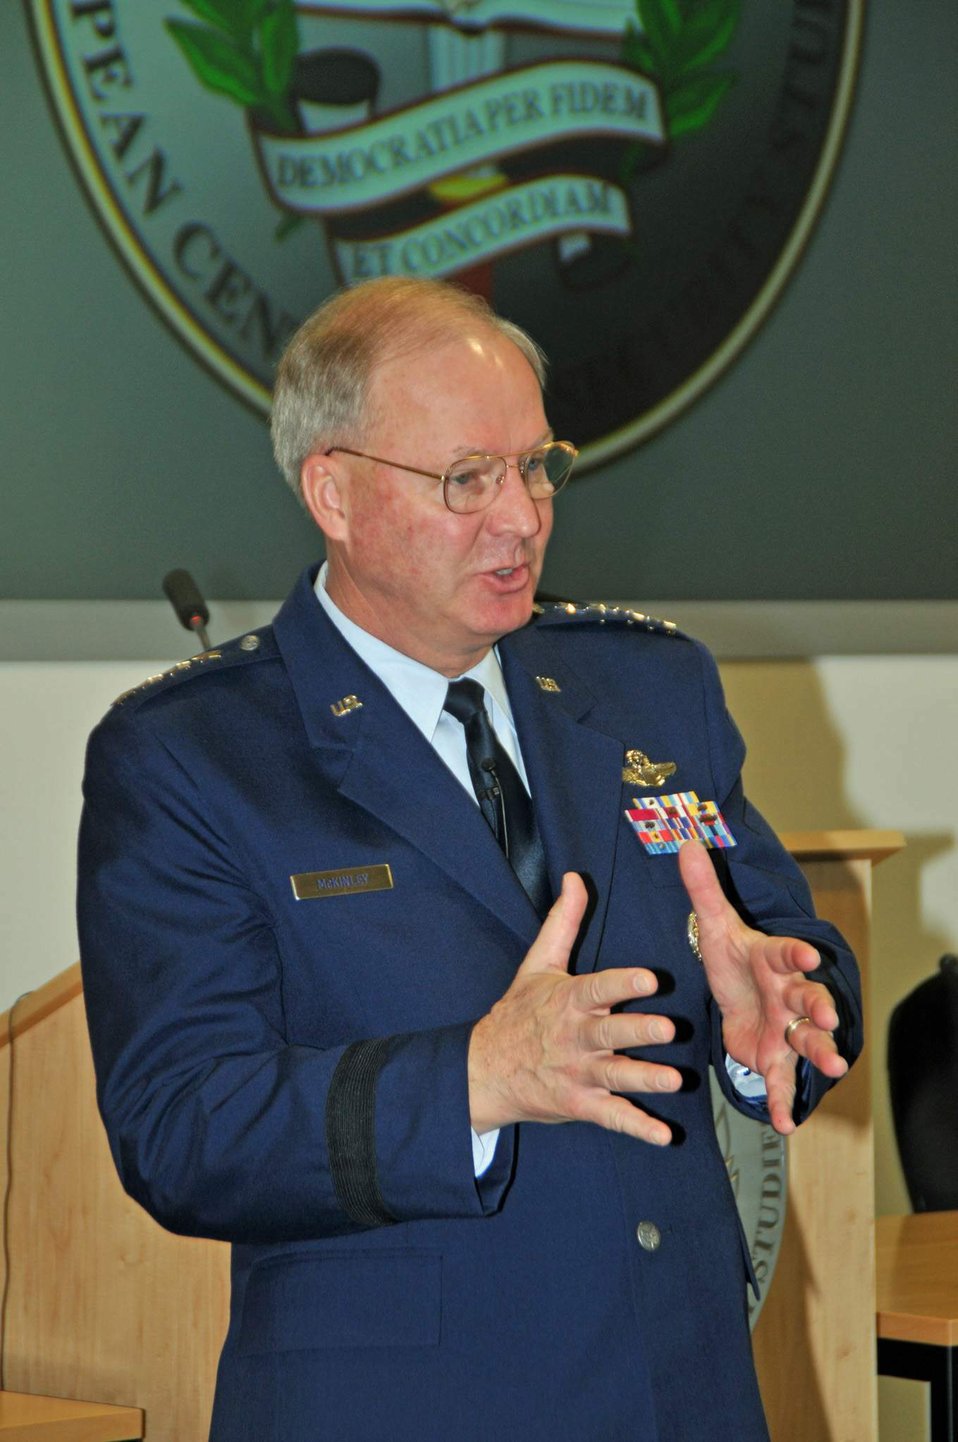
General McKinley speaks about partnerships

Gen. Craig R. McKinley, chief of the National Guard Bureau, speaks to nearly 50 international, civilian and military leaders attending the Seminar on Transatlantic Security at the George C. Marshall European Center for European Security Studies Feb. 5 in Garmisch-Partenkirchen, Germany.